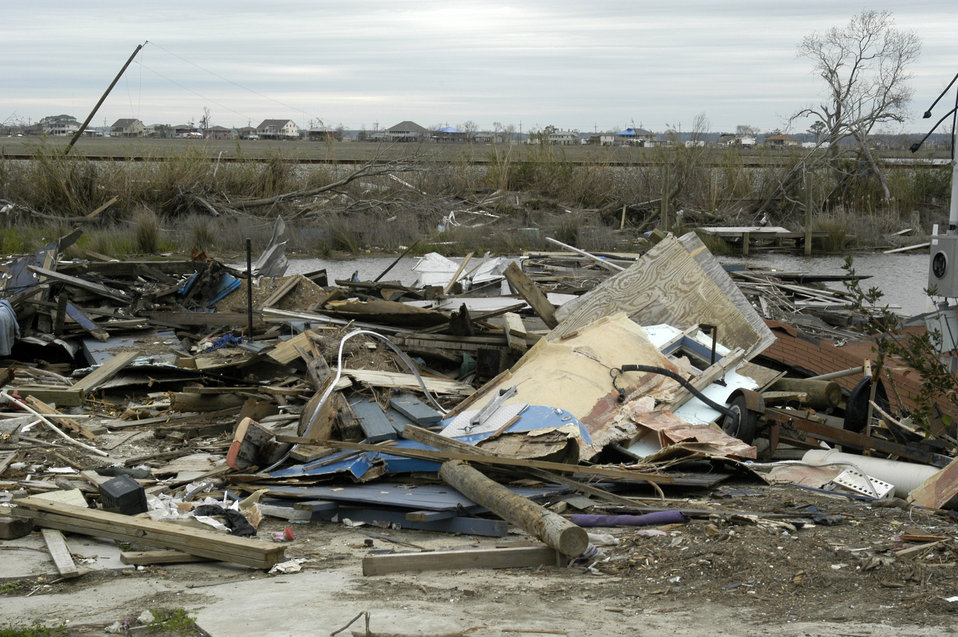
Homes built along the many canals in New Orleans, LA, were washed away by Hurricane Katrina’s 20-foot storm surge that overwhelmed the city’s levees. Hurricane Katrina was the 6th strongest hurricane in U.S. history and the 5th deadliest. Katrina made landfall on Monday morning, August 29, 2005 as a Category 3 hurricane with sustained winds of 125 mph with over a 20-foot storm surge. Katrina caused catastrophic damage over 90 thousand square miles across Louisiana with an estimated $75 billion dollars in damage. The total economic impact to the Gulf Coast was estimated at over $150 billion. 80% of New Orleans, LA, was underwater with some areas more than 20 feet deep. Less than a month later southern Louisiana was struck by a second Category 3 hurricane Rita inflicting more damage in the southwestern areas of Louisiana adding an addition $12 billion worth of damage to the already beleaguered state. The U.S. Army Corps of Engineers (USACE) under the auspices of the Federal Emergency Management Agency (FEMA) was the lead service in providing assistance to the citizens of Louisiana. The U.S. Department of Agriculture (USDA) supplied emergency food aid, emergency loan assistance to farmers and home owners, and USDA personnel from around the nation volunteered their time and muscle to aid in the recovery operations.